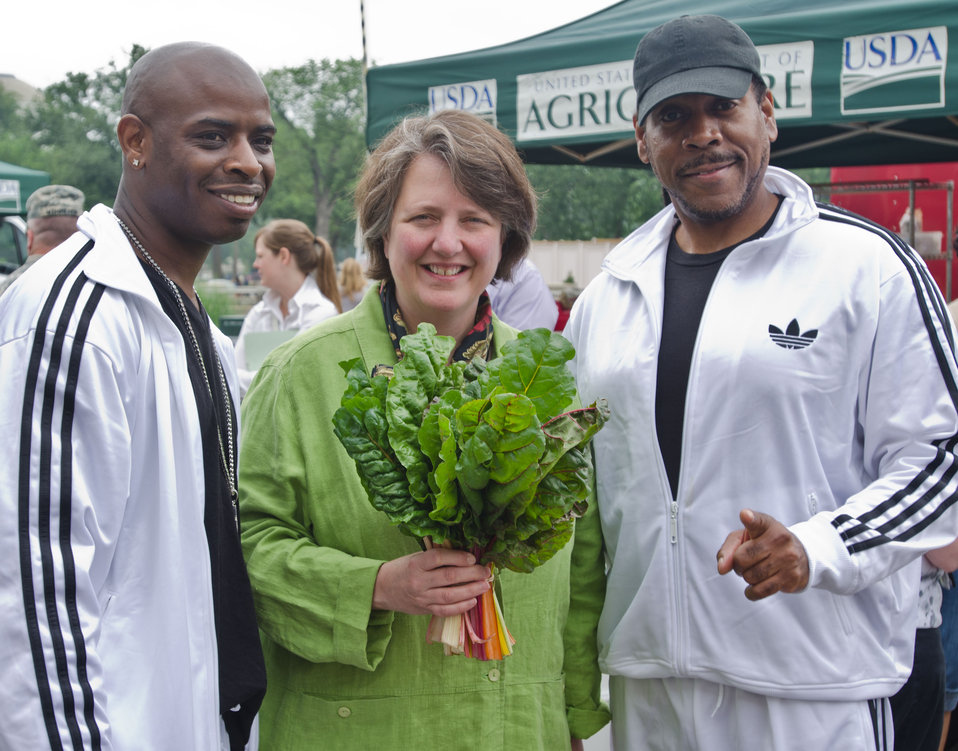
Agriculture Deputy Secretary Kathleen Merrigan with Hip Hop Public Health's Easy A.D., right and disk jockey Artie Green at the opening the 17th season of the U.S. Department of Agriculture (USDA) Fresh vegetables from C & T Produce at the U.S. Department of Agriculture (USDA) summer farmers market opening of the 17th season at the USDA Whitten Building east parking lot in Washington, D.C., on Friday, May 31, 2012. This year's theme is Grow, Healthy, Eat Healthy & Be Healthy. USDA and Fuel Up to Play 60, in partnership with the National Dairy Council and the National Football League, invited residence, visitors and local school children to participate in opening day activities. Hip Hop Public Health featuring Easy A.D. from Cold Crush Brothers and disk jockey Artie Green play music and invite people to get up on stage to dance or hula hoop to get active. D.C. Truck Farm help people know from what plants, that certain herbs, fruit and produce come from by giving tail-gate tours of the garden growing in the bed of their pickup truck. The Peoples Garden Initiative and USDA Executive Master Gardeners gave away a variety of fruit and produce seedlings to include the Tomato ‘Abraham Lincoln’ in celebration of the USDA 150th Anniversary and to share their harvest. New features for 2012 include an on-site sign language interpreter, a hand washing station, and a USDA-certified organic vendor. Other products selling today are fresh fruits, vegetables, herbs, baked goods, meats, kettle popcorn, local honey, hand-made soap and more.